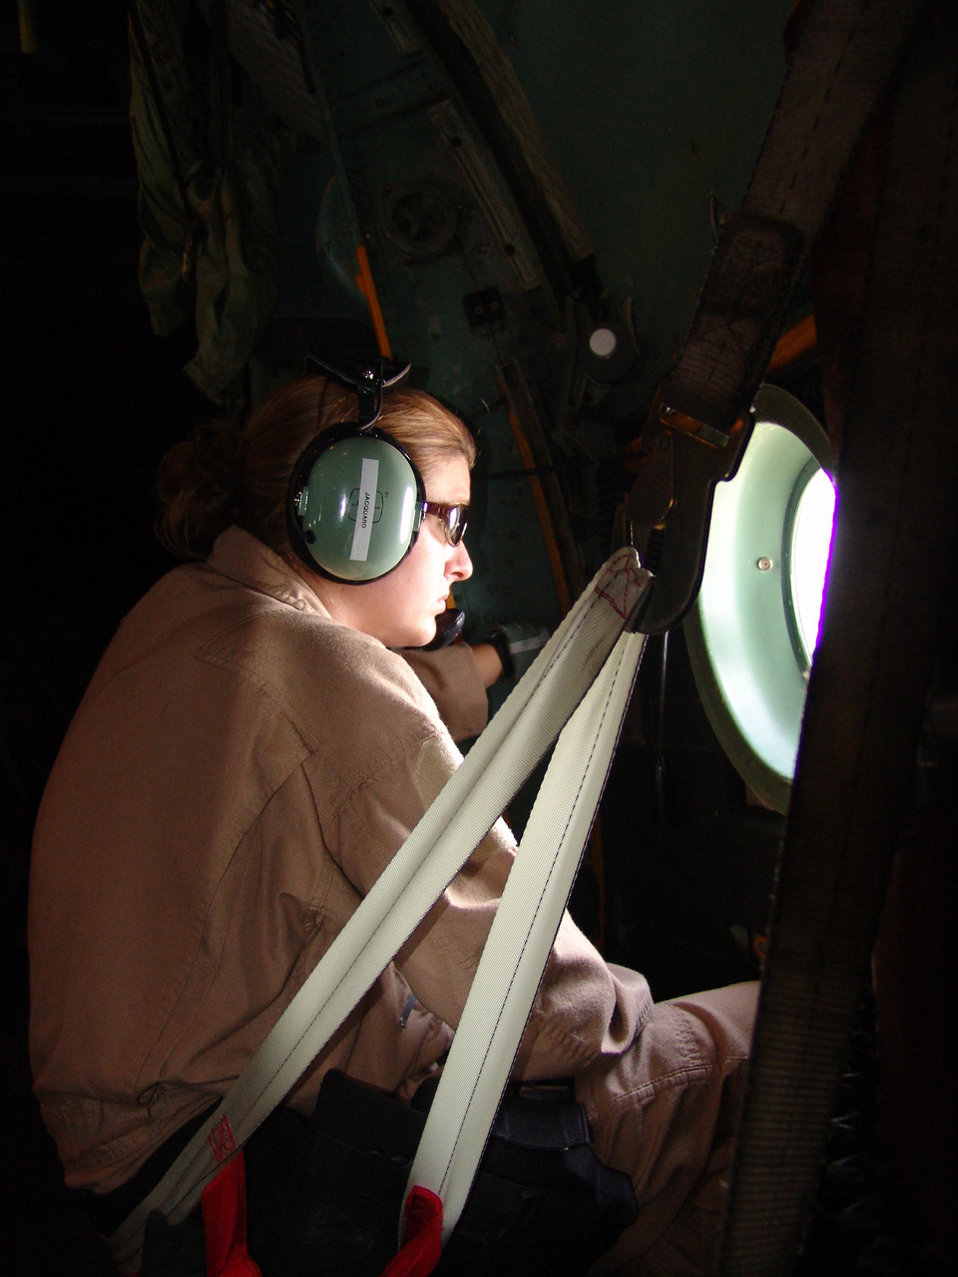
Hangin’ out

OVER IRAQ -- Staff Sgt. Katie Jacquard scans for threats while aboard a C-130 Hercules. She is a loadmaster with the 746th Expeditionary Airlift Squadron. The 746th EAS is one of two airlift squadrons assigned to the 386th Air Expeditionary Wing and provides tactical airlift supporting Operation Iraqi Freedom.